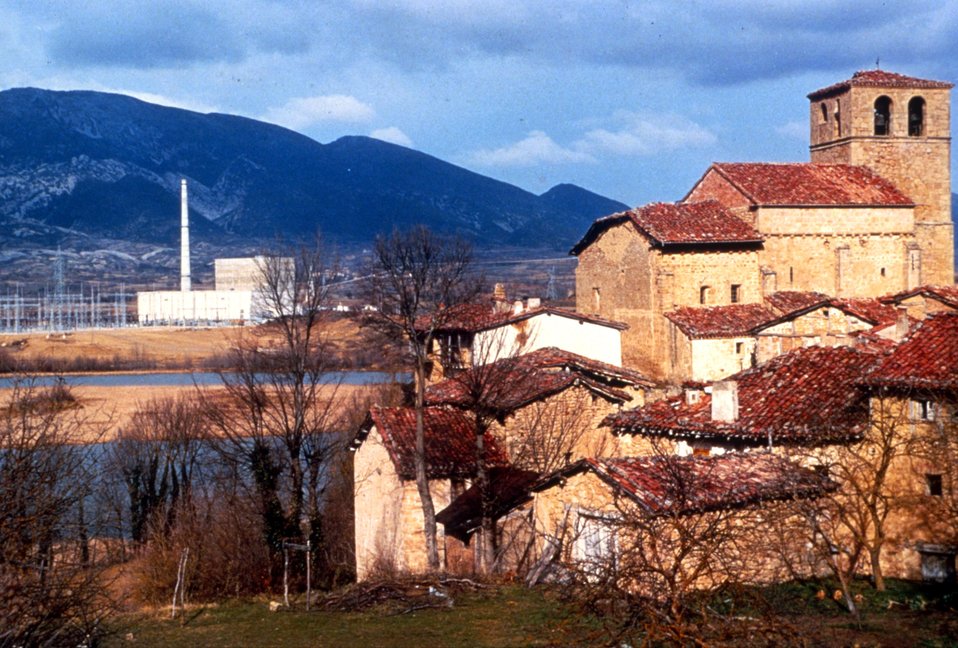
Santa Maria de Garona, Burgos, Spain. c. 1970